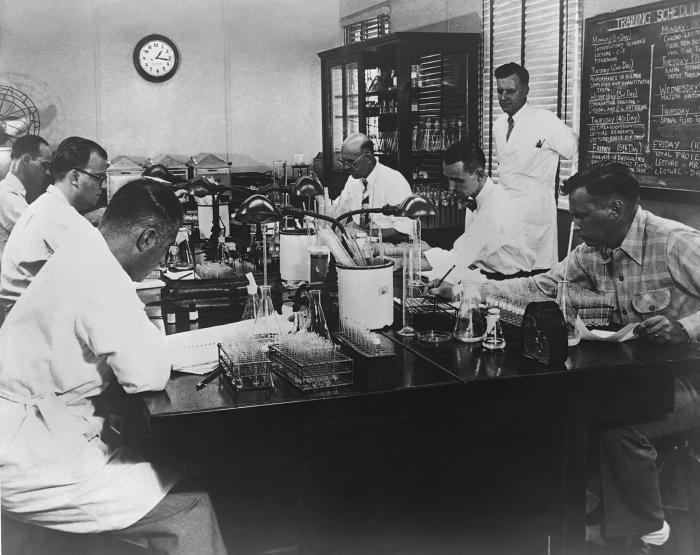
This historic image depicted a group of students, as they were at work in the venereal disease lab.